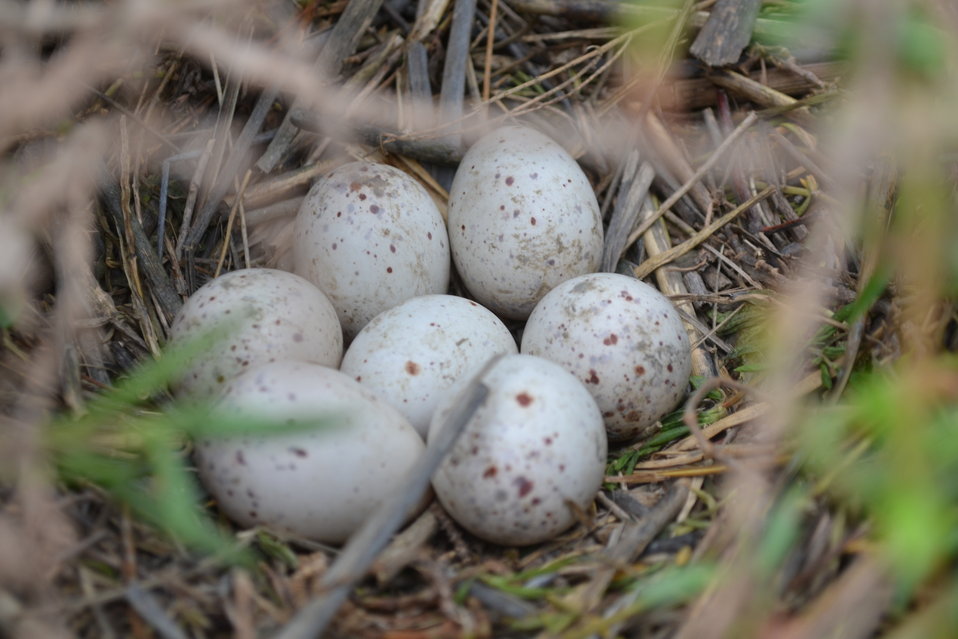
Light-footed clapper rail (LFCR) nest and eggs

An unusually high number of eggs in this nest, this LFCR pair is sure to hatch a successful clutch.